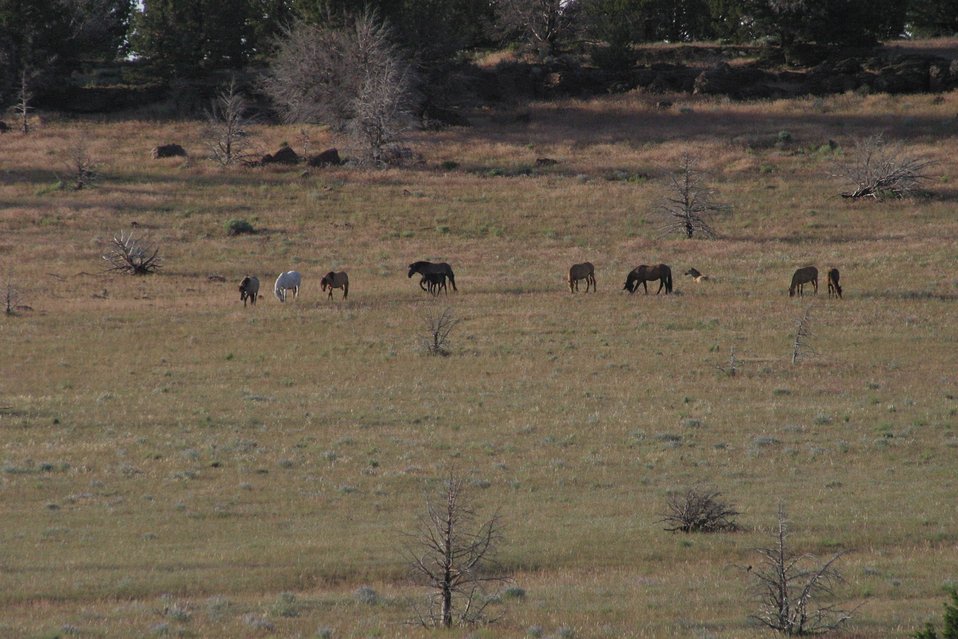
Wild Horse(s) in the Kiger Wild Horse Herd Management Area.